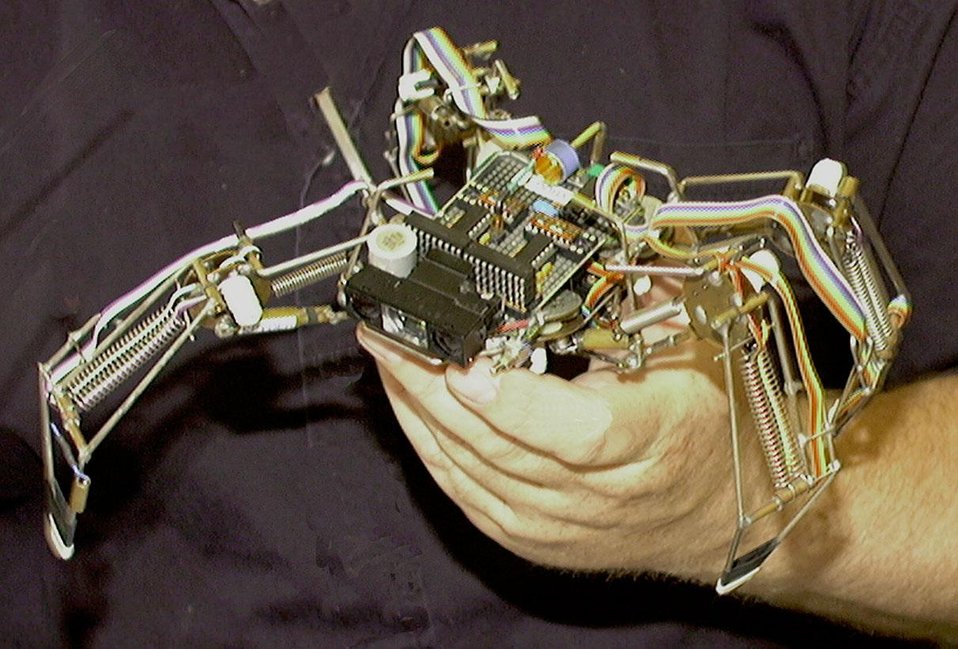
THE SPYDER BEAM (BIOLOGY, ELECTRONICS, AESTHETICS, AND MECHANICS) ROBOT.

BEAM, WHICH STANDS FOR BIOLOGY, ELECTRONICS, AESTHETICS AND MECHANICS, REFERS TO THE APPROACH TO ROBOTICS PIONEERED BY BEAM FOUNDER, LANL SCIENTIST MARK TILDEN. BEAM ROBOTS ARE MODELED MORE ON THE SIMPLE, REPETITIVE BIOLOGICAL PROCESSES OF INSECTS THAN THE COMPLEX, HUMAN-LIKE OPERATIONS THAT ARE THE GOAL OF TRADITIONAL ROBOTS.